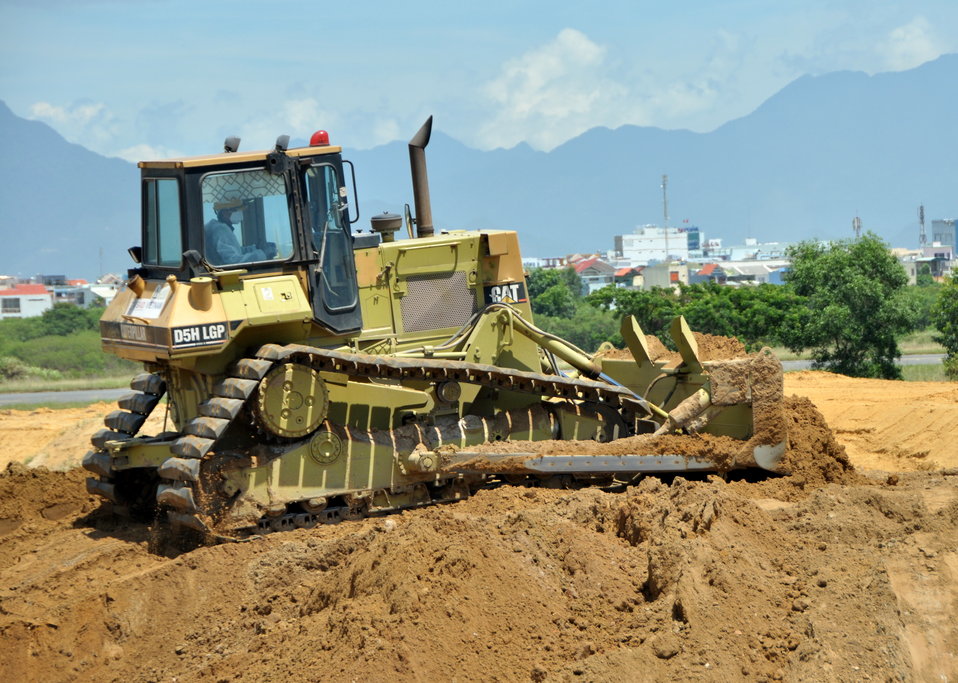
Environmental Remediation Progress at the Danang Airport site

Progress at the Remediation of Dioxin Contamination Project Site

Danang, Vietnam, June 5, 2013